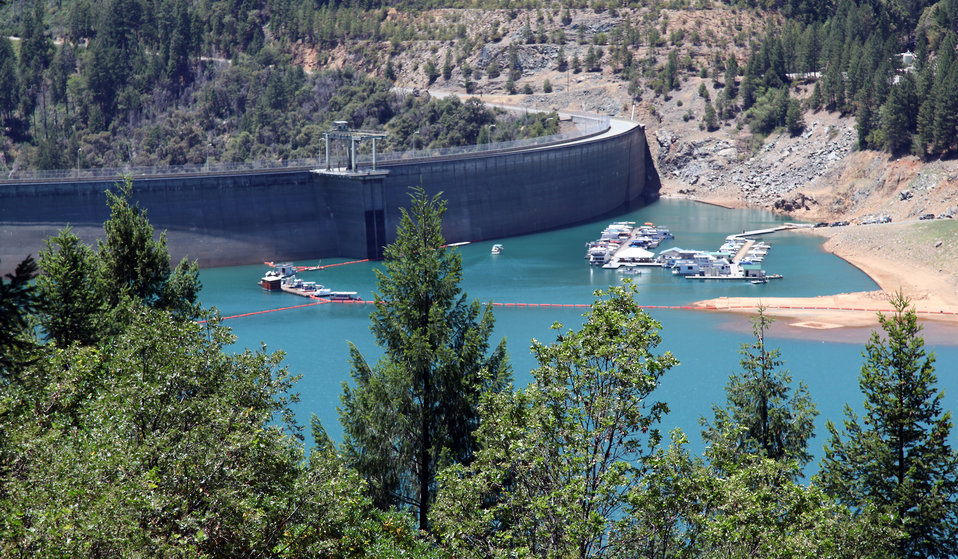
Corps reconnaissance team tours Yuba River

New Bullards Bar Dam, owned and operated by Yuba County Water Agency, as seen on June 18, 2014. Members of the U.S. Army Corps of Engineers Sacramento District team assessing possible federal projects for ecosystem restoration along Northern California's Yuba River reviewed the water’s route from Daguerre Point Dam up to Downieville, including a stop at New Bullards Bar. The Corps team was accompanied by members of the YCWA and several YCWA consultants in this initial trip to gather data on the overall state of the Yuba and water facilities along the route.